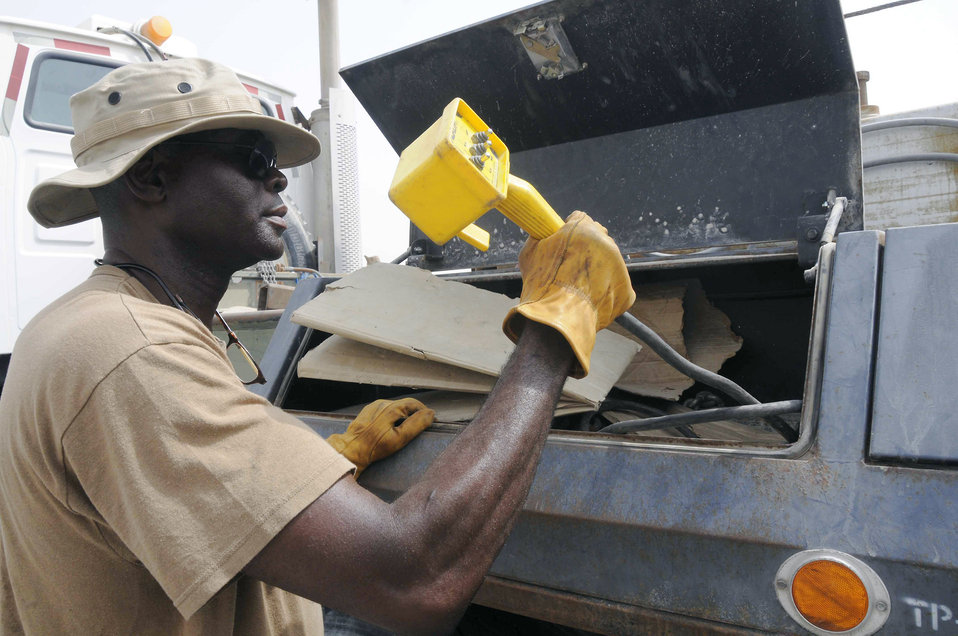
Airmen improve processes to increase efficiency

Mack Williams grabs the Zachlift remote control to lift a bus prior to towing July 22 at a Southwest Asian air base. Mr. Mack is a 379th Expeditionary Logistics Readiness Squadron vehicle operator trainer from Coolidge, Ga.